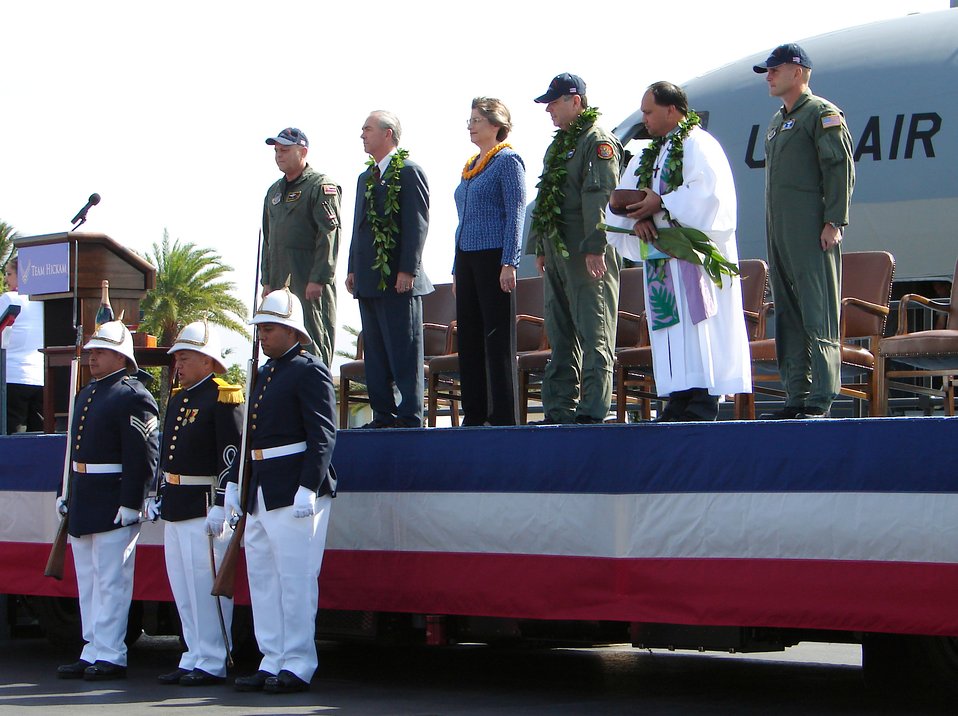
C-17 ceremony

HICKAM AIR FORCE BASE, Hawaii (AFPN) -- (From left) Brig. Gen. Peter S. Pawling, commander of the 154th Wing, Hawaii Air National Guard; Ron Marcotte the vice president and general manager for global mobility at the Boeing Company; Gov. Linda Lingle; Gen. Paul V. Hester; Kahu Kordell Kekoa; and Col. William J. Changose, commander of the 15th Airlift Wing, observe the